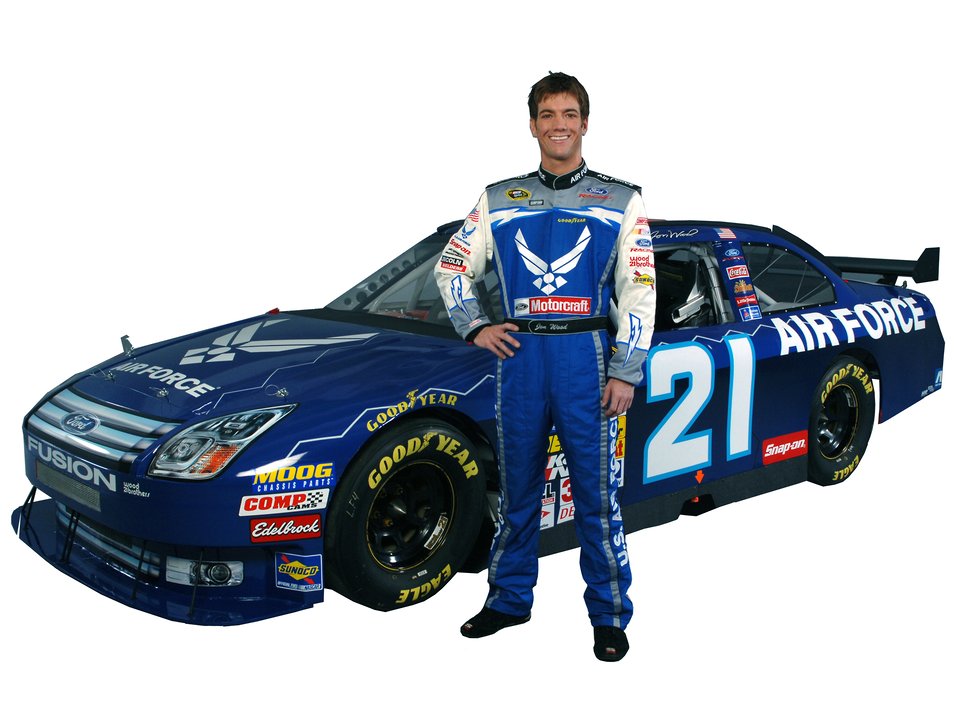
Air Force races into NASCAR season at Daytona

Air Force NASCAR driver, Jon Wood, and the new paint scheme on the No. 21 Ford Fusion. The Air Force enters its eighth season of sponsorship in the NASCAR Sprint Cup Series, starting at the Bud Shootout Feb. 9 in Daytona, Fla.